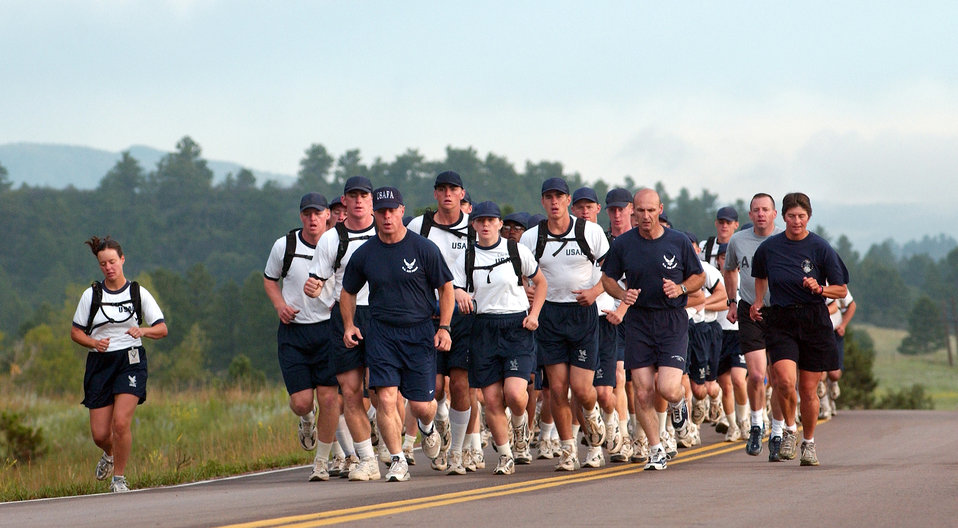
Follow me

U.S. AIR FORCE ACADEMY, Colo. -- The commandant of cadets, Brig. Gen. John Weida (blue shirt and hat), leads the Class of 2008 on its 36-mile relay